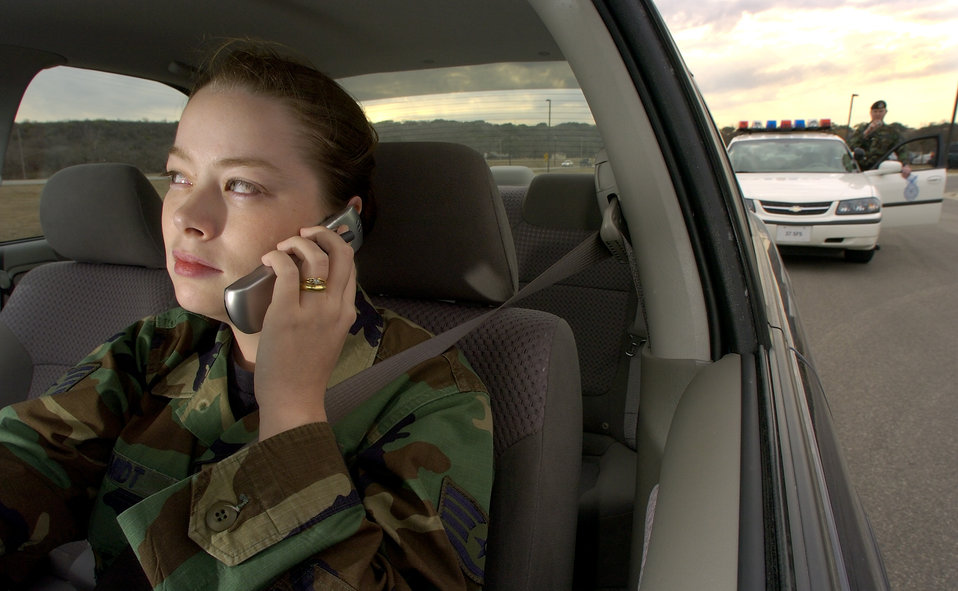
Cell phone stop

SAN ANTONIO (AFPN) -- Beginning Feb. 27, drivers are not allowed to talk on their cell phones while driving on Air Force installations without a hands-free device. This violation will now be considered a